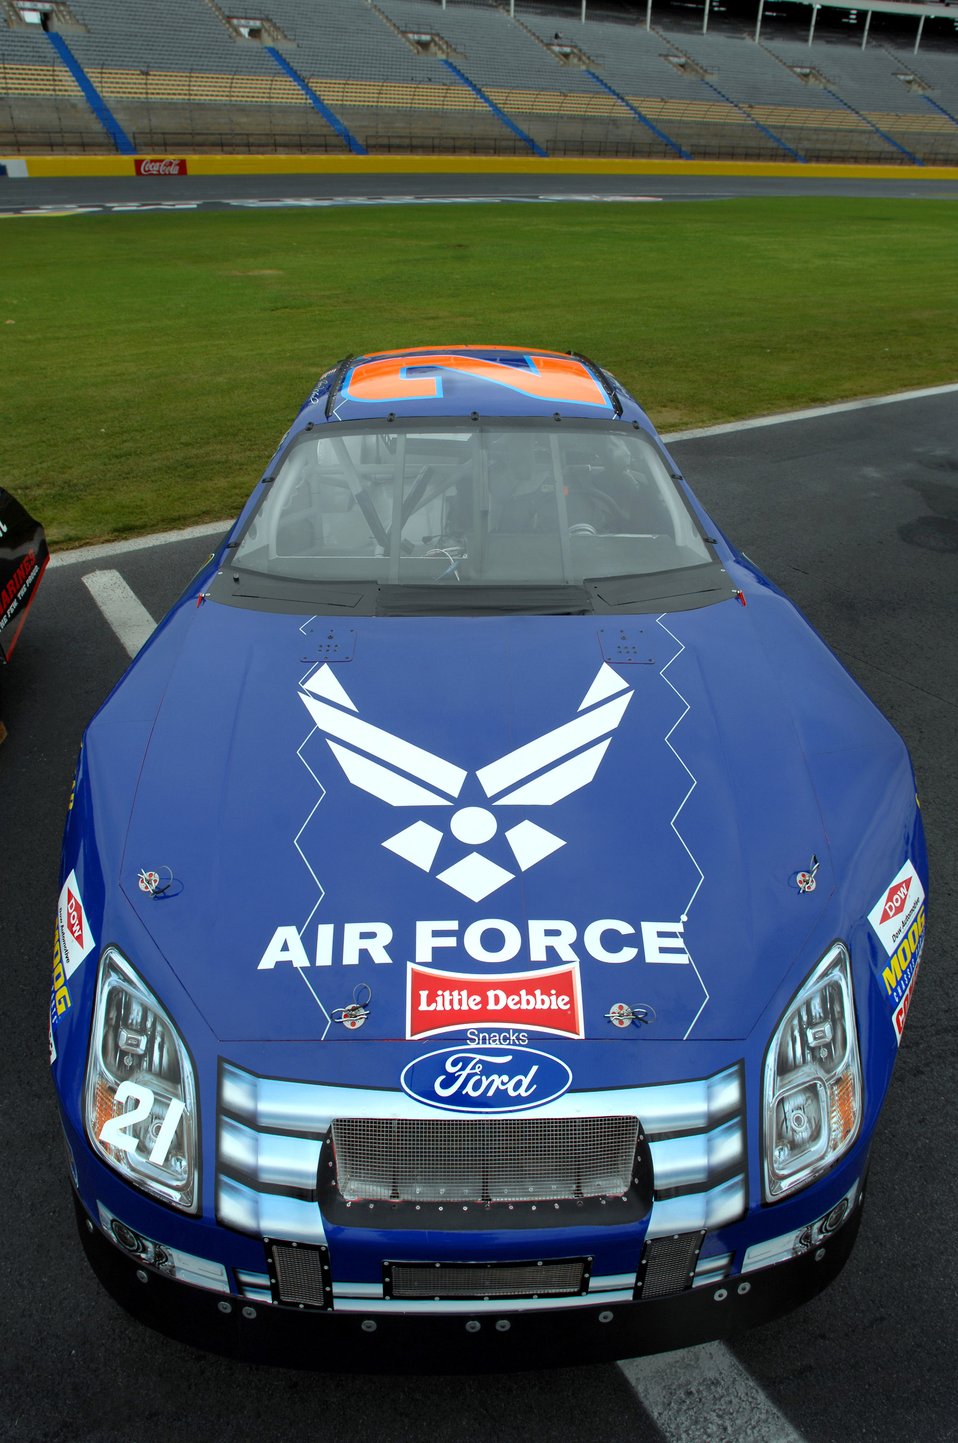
NASCAR salutes Air Force

The U.S. Air Force's NASCAR No. 21, driven by Jon Wood, is parked May 8 on display at an unveiling ceremony at Lowe's Motor Speedway in Charlotte, N.C., in recognition of